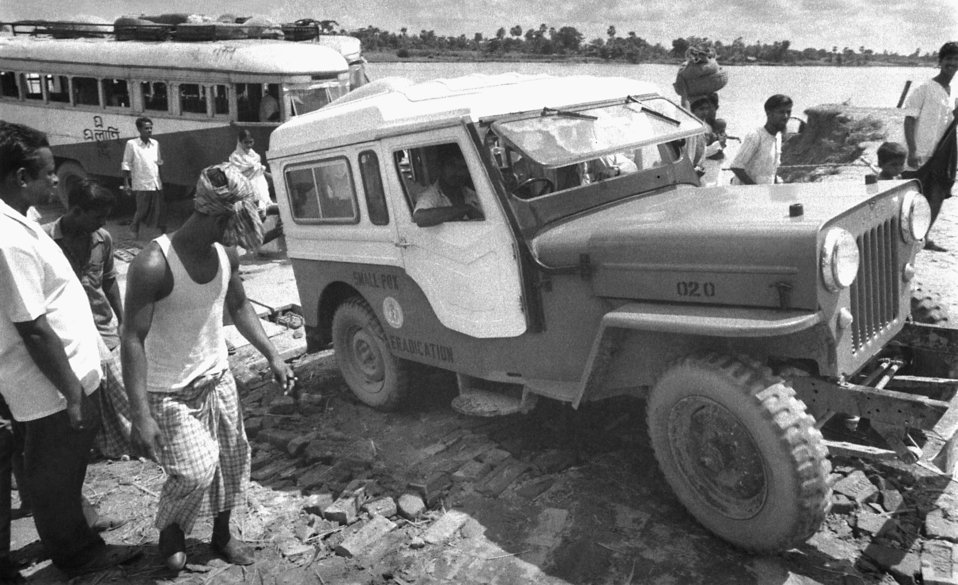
This photograph was captured by Pierre Claquin, M.D., B.A.C., who at the time was a member of the World Health Organization's Smallpox Eradication Program. It was provided by former E.I.S. officer, Stanley O. Foster M.D., M.P.H., was one of a series entitled 'The Story of One Smallpox Jeep', which depicted the travails faced by the jeep, and its occupants of public health practitioners, as they road through the Bangladesh countryside in an attempt to eradicate smallpox from the country. This Mahendra Jeep was being ferried across a river in order to continue its rural countryside journey educating residents about smallpox, its signs and symptoms. At the time of Smallpox Eradication, 72-76 ferries were used to cross the rivers. This was the Daukandi ferry, which traveled from Dhaka to Comilla, a route now traversed by a bridge. Travel which used to take 12-24 hours, now can be done in 2-3 hours by bridge, many which were blown up during the country's 1971 war with India.